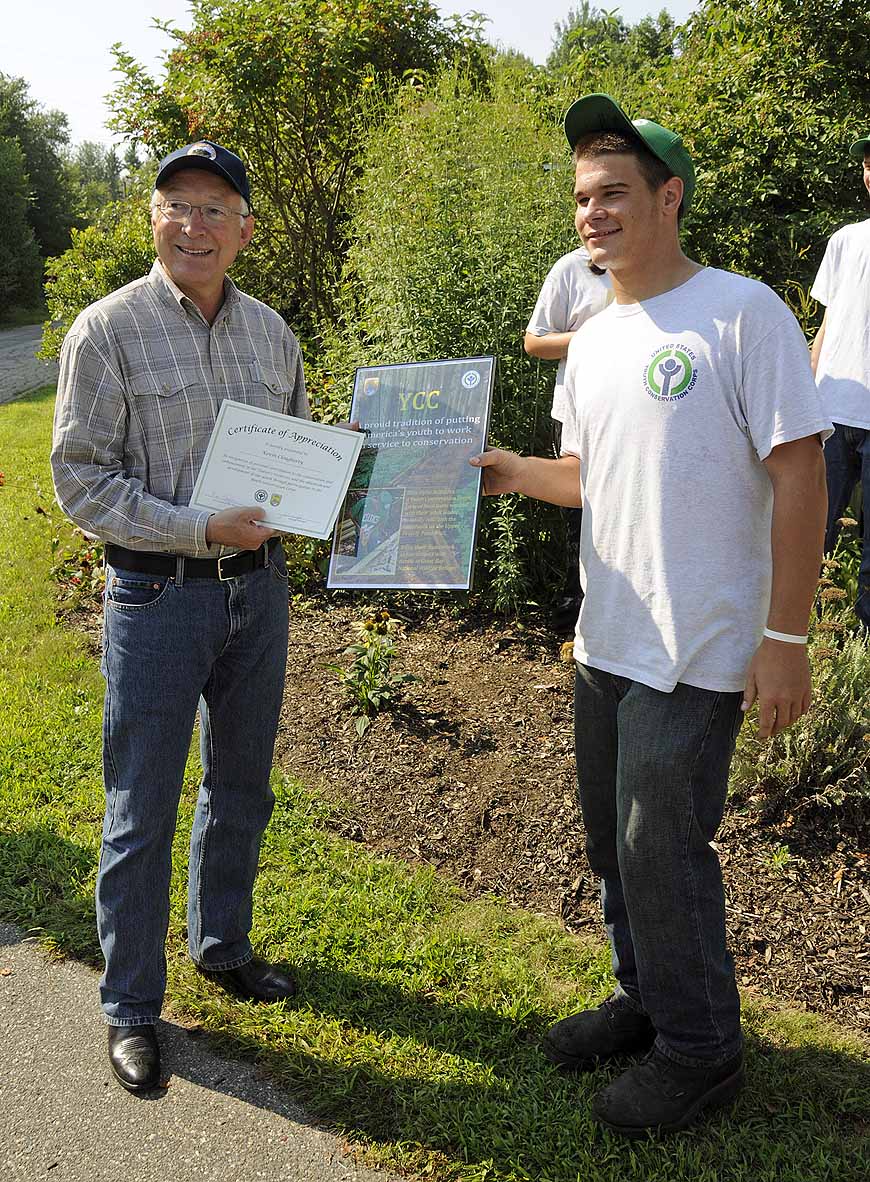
Secretary Salazar visit to Great Bay

Secretary Salazar with Youth Conservation Corps member.